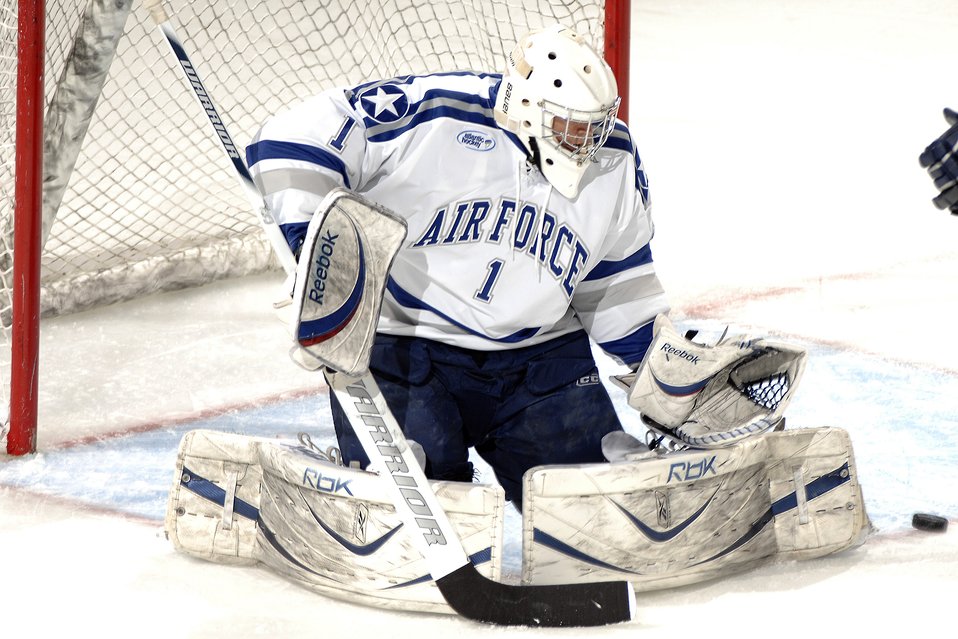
Falcons get out-Charged!

Falcon senior goalie Andrew Volkening blocks a shot against the University of Alabama-Huntsville Oct. 17, 2009, at the U.S. Air Force Academy Cadet Ice Arena near Colorado Springs, Colo. The UAH Chargers held off the Falcons for a 4-2 win as Volkening allowed four goals and made 23 stops. Air Force opens Atlantic Hockey Association play this weekend as the Falcons host Rochester Institute of Technology Oct. 23-24 at the Cadet Ice Arena.